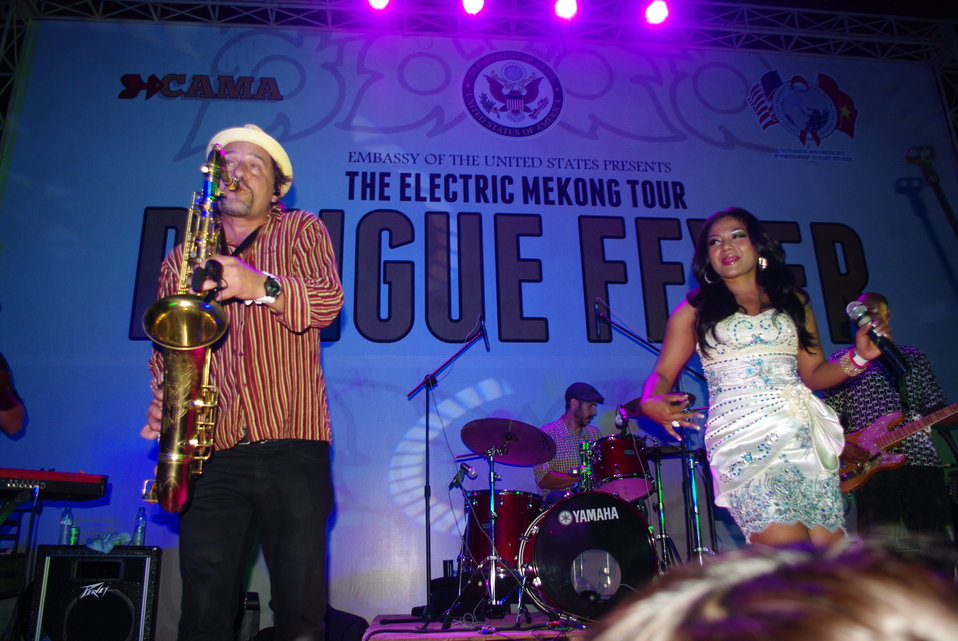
PEPFAR, U.S. Embassy Host Dengue Fever Concert in Hanoi